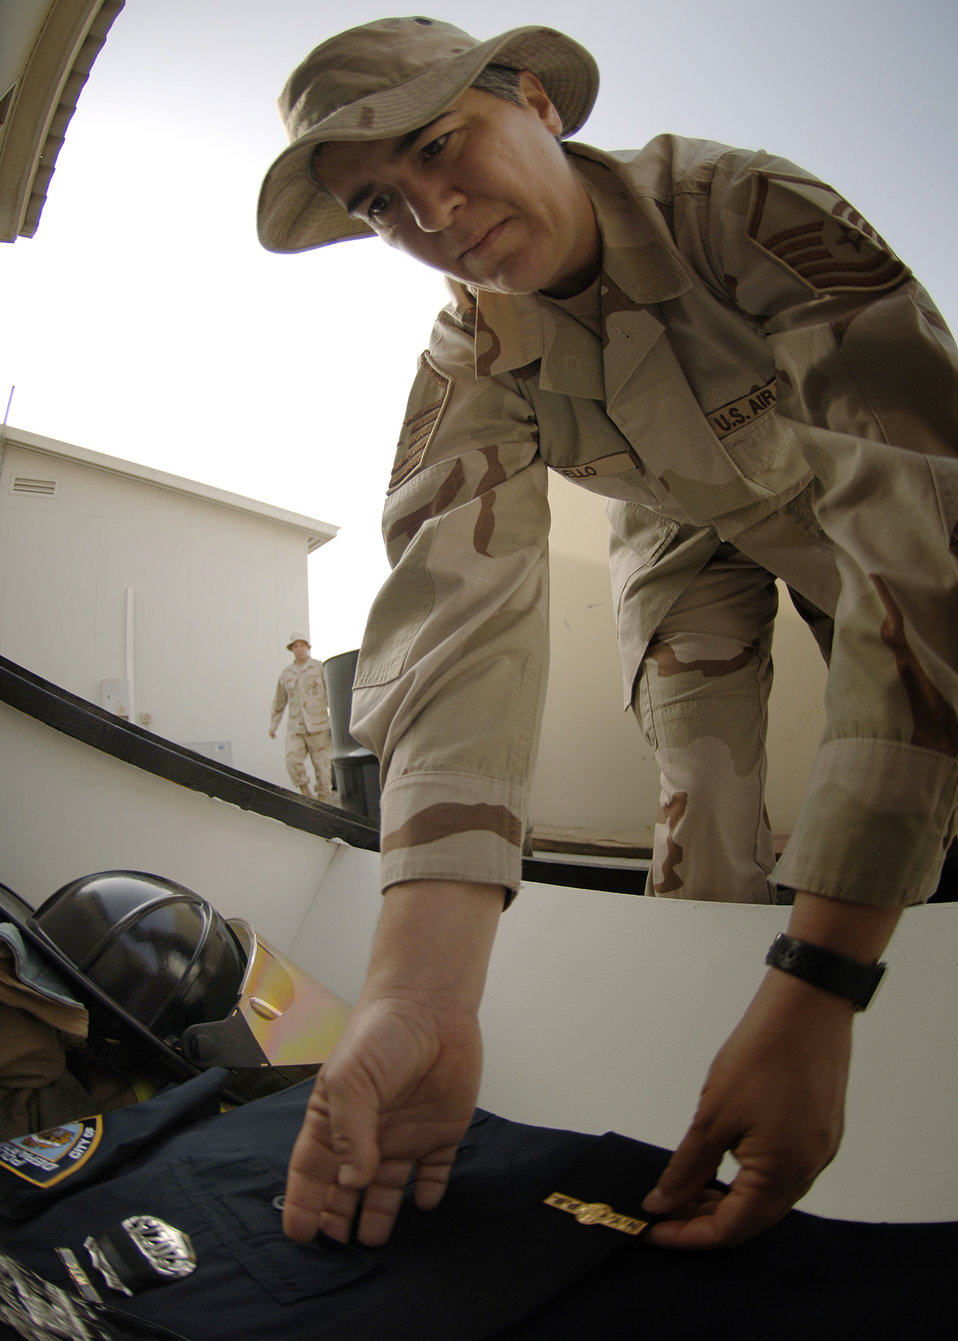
Deployed N.Y.P.D. officer dedicates uniform for 9/11 display

Master Sgt. Rose Condello arranges the badge on her New York Police Department uniform she donated Sept. 11 at a Southwest Asia air base. The uniform was donated for a display at the 380th Air Expeditionary Wing where she is currently deployed. The badge is adorned with the traditional mourning band. Above the badge she has placed the breast band worn by New York City police officers with the letters